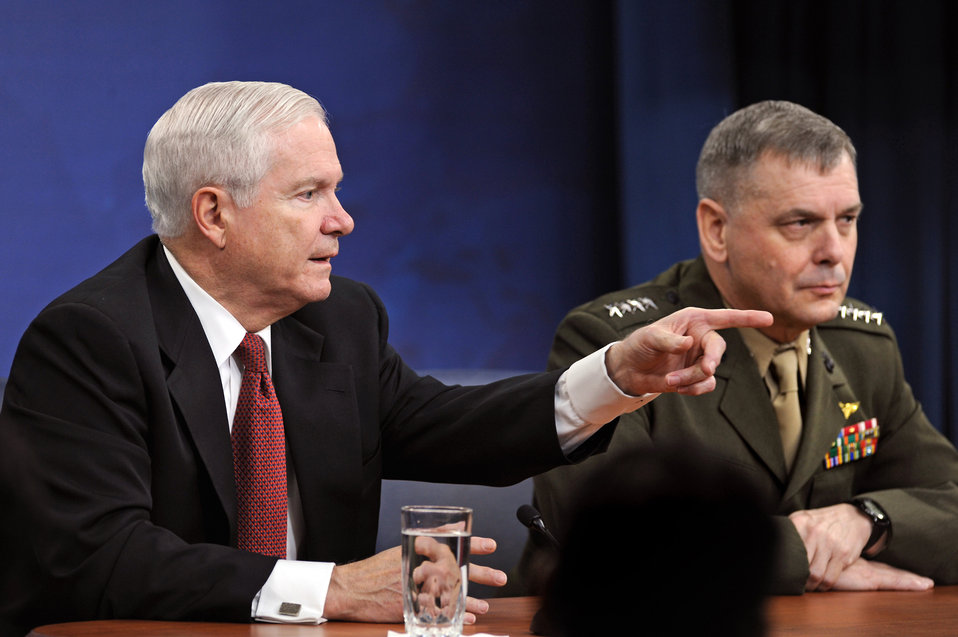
Predators in Libya

Defense Secretary Robert M. Gates calls on a reporter for a question April 22, 2011, at the Pentagon. Secretary Gates and Marine Gen. James E. Cartwright, the vice chairman of the Joint Chiefs of Staff, fielded questions dealing mainly with the situation in Libya and the defense budget.